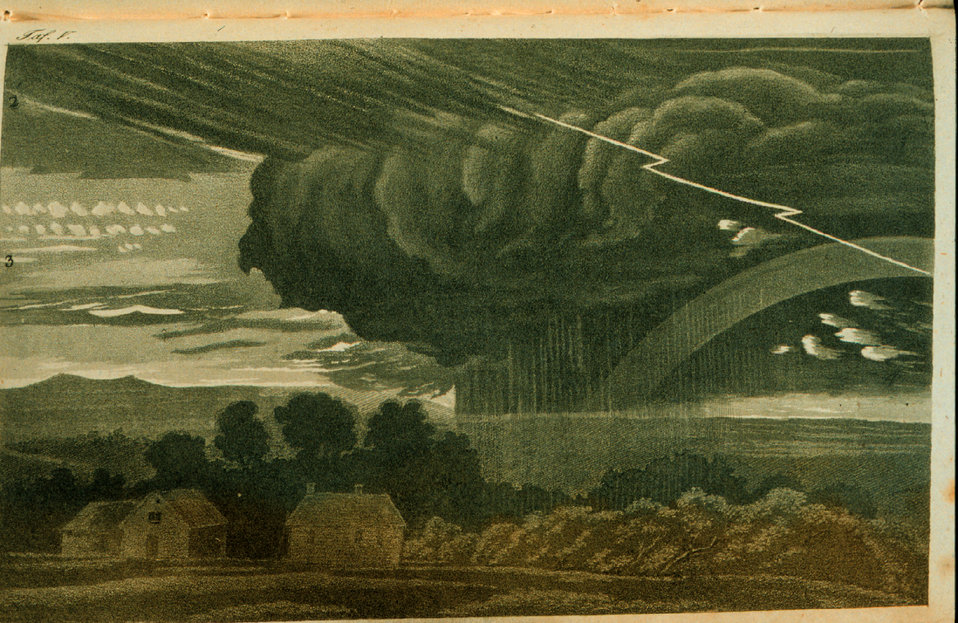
Selections from a German cloud atlas In: 'Wolken und andere Erscheinungen....', Thomas Forster, 1819 Figure 5